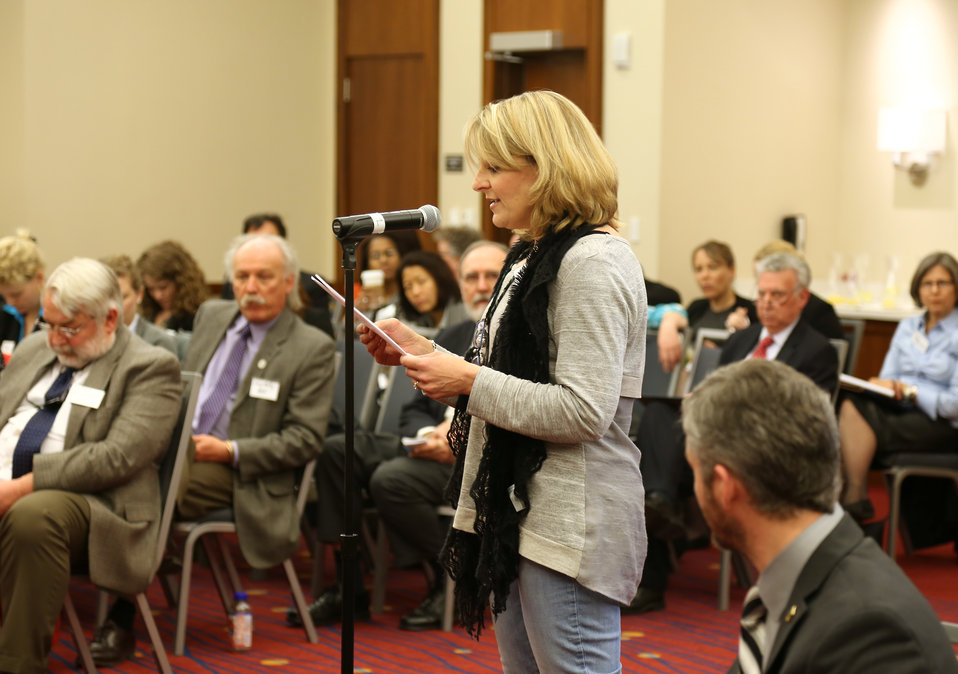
Wildlife Trafficking Advisory Council Meeting March 20, 2014